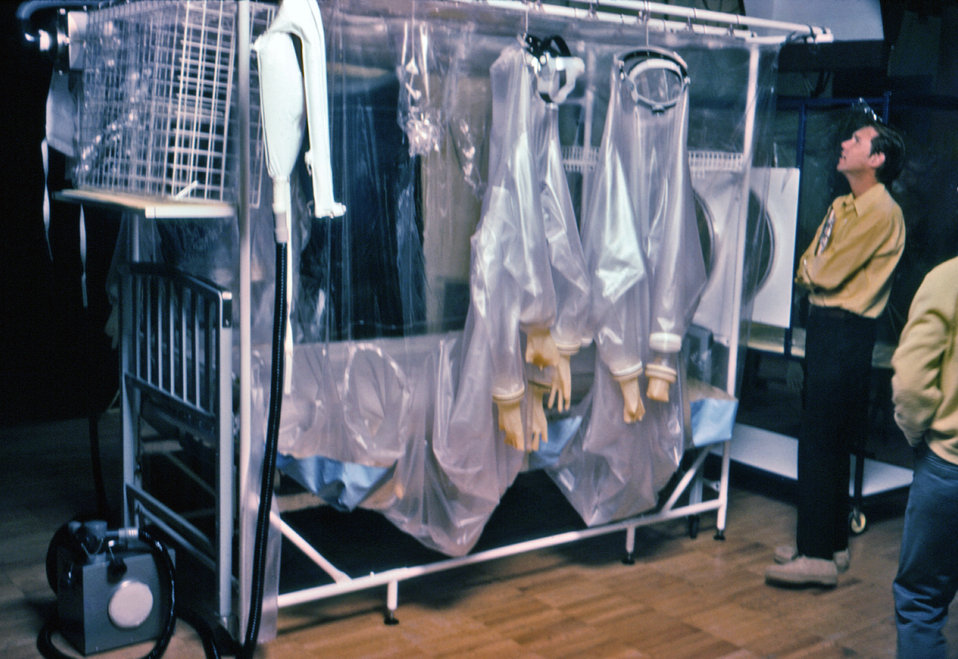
This Bed Isolator, produced by Vickers Medical, Ltd., was on display in 1977 at the CDC.